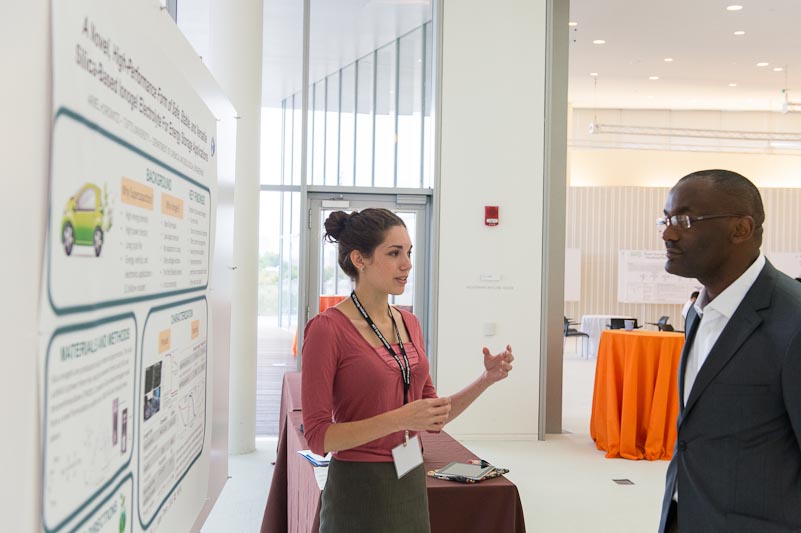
Clean Energy Student Poster Session